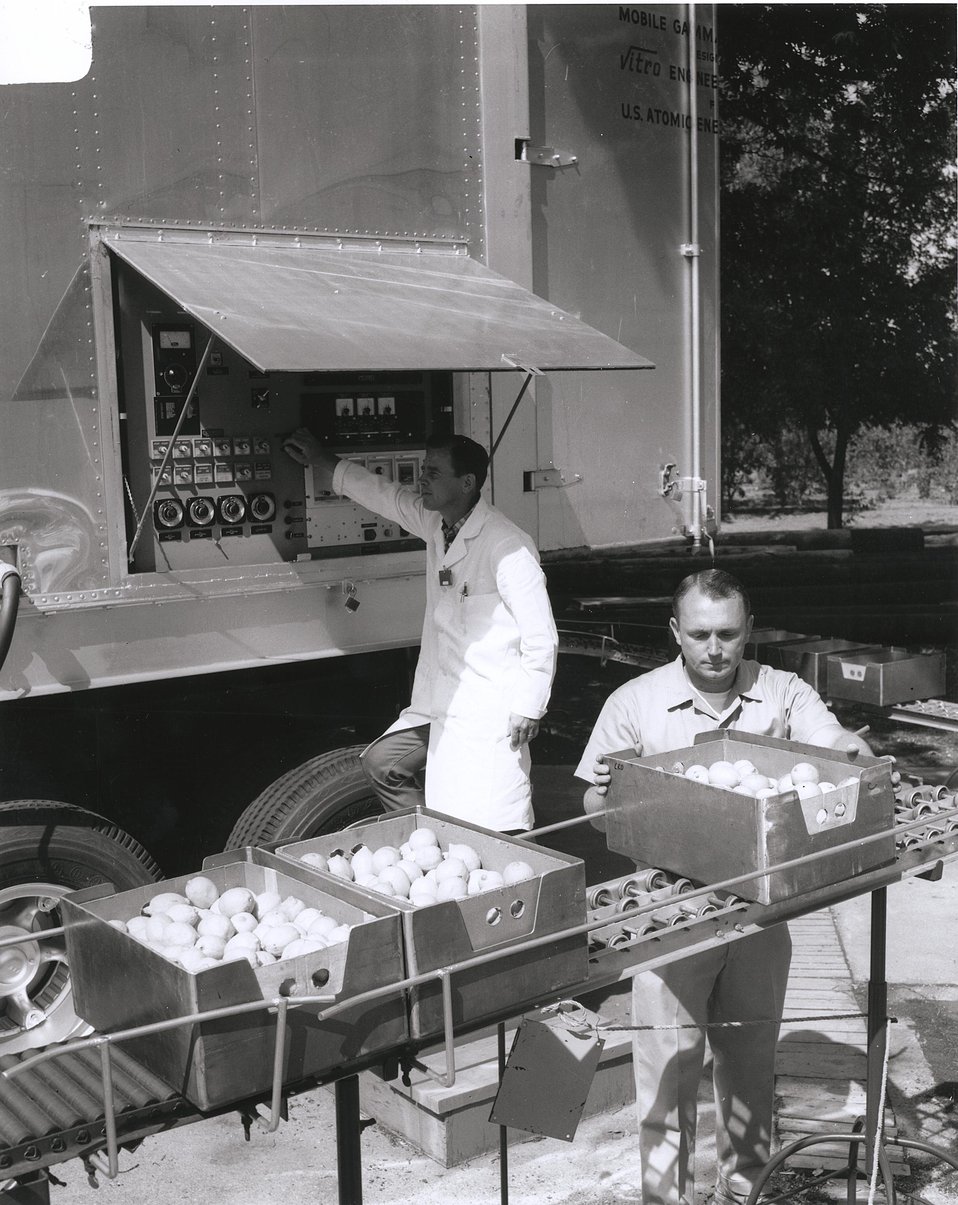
Technicians preparing to irradiate lemons in Mobile Irradiation, University of California at Davis Laboratory. c. 1968